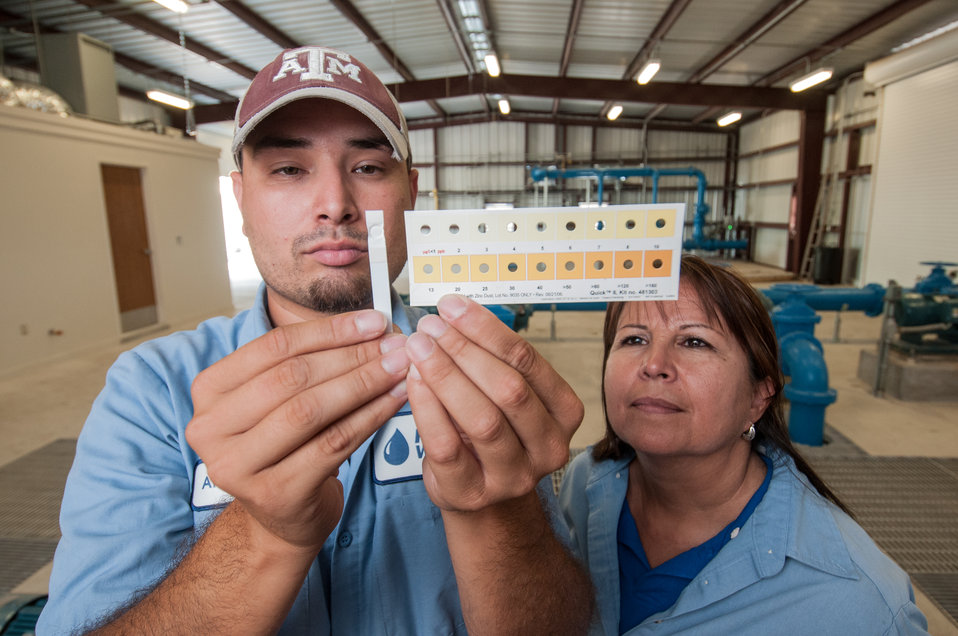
Anthony Arredondo holds a test strip to a comparison chart to show Freer Water Control and Improvement District (FWCID) Manager Diana Adame, right, that the tested water is less than one part per billion of arsenic, thanks to financial assistance of the U.S. Department of Agriculture (USDA) Rural Development (RD).

Freer Water Control and Improvement District (FWCID) benefits from the financial assistance of the U.S. Department of Agriculture (USDA) Rural Development (RD) to complete a two-phase approach to meeting the city’s water supply and safety needs, on Tuesday, June 18, 2013. Although, the naturally occurring arsenic levels have remained constant for more than a century, the Environmental Protection Agency (EPA) safe level standards have established lower levels of arsenic to be safe for human consumption. To meet those levels FWCID approached USDA and was awarded a $986,000 loan for Phase I, to install two new water wells, each rated at 167 gallons per minute (creating a total of eight wells); 13,600 feet of well collection lines; and 15,000 linear feet of well control line to remotely control the well pumps and the 1,000,000 gallon holding tank at the well facility, which supplies water to the new Arsenic Removal System (Phase II). Previously, water was manually controlled by personnel who knew when and how long to manually opened and closed water valves or started well pumps to ensure holding tank levels were within operating levels during peek and slack times of the day. Phase II was a combination of a $1,832,000 loan and a $1,258,750 grant, which provided for the customized arsenic removal system, seen in these photos. The system includes a new 3,530 sp. ft. facility, on a .76-acre site, and houses the operations room, computer and power system, laboratory room, and pump systems. The entire operation can be monitored through a desktop computer interface system. The computer-controlled system ensures raw water is fed to the arsenic removal pump system, which works in sequence to maintain a constant pressure, when needed, to pump water through (blue) arsenic removal absorber vessels, and into ground storage tanks that feeds the residential and commercial needs of the city. Samples of water are periodically tested; and so far the arsenic levels have been below 1 part per billion (PPB), well under the 10 PPB limit.